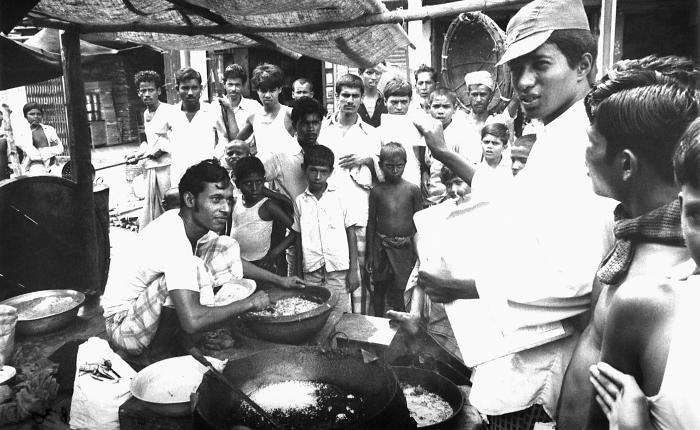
This 1975 photograph depicted a community smallpox eradication team volunteer as he was questioning members of a market crowd about the possible presence of smallpox cases in their community. If, indeed, a case was reported, from no matter the source, it was investigated fully, and if confirmed as a smallpox case, a reward was paid to the informant, no matter the age, and it was subsequently entered into the 'Containment Book'. The Containment Book was a ledger, which recorded all of the names of anyone living in, or within one half of a mile from a smallpox case, and subsequently all those listed were vaccinated against smallpox. Those vaccinated were followed until a 'successful' vaccination was observed. Periodic surveys showed that by the end of the program, 80% of the public knew about the cash award presented to those who had informed the public health authorities of a confirmed smallpox case.